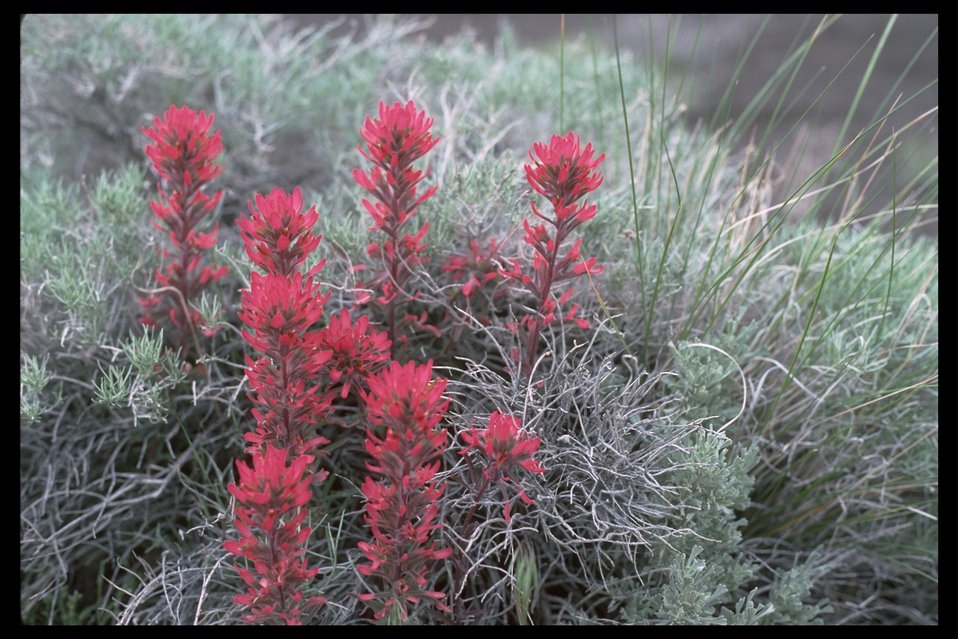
Indian Painbrush in Table Mountain WSA. (WSA 2-72i)